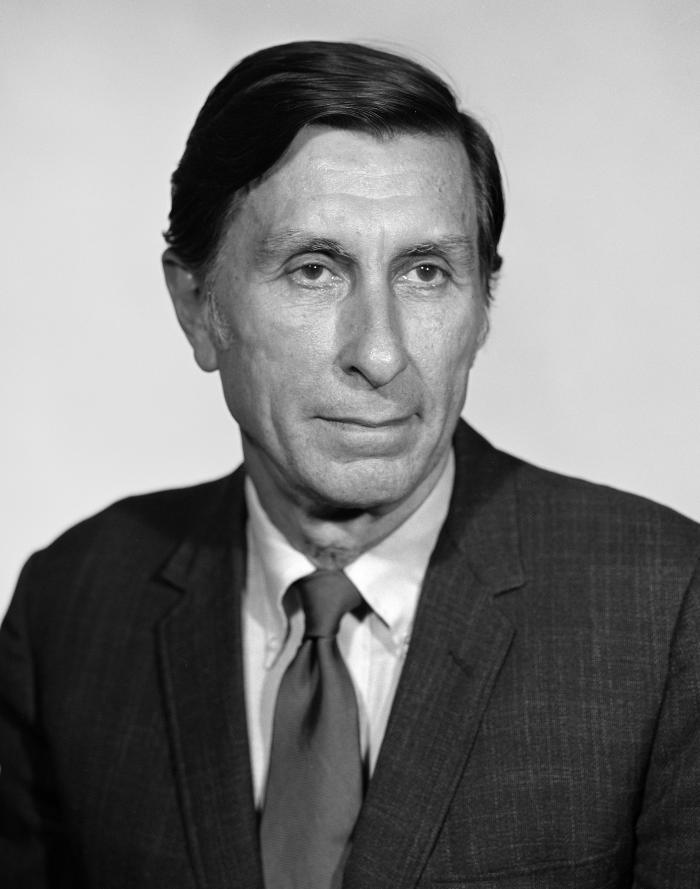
This photograph showed Centers for Disease Control official, Charles C. Shepard, M.D., who was internationally recognized for his work in leprosy, and Legionnaires' disease research.